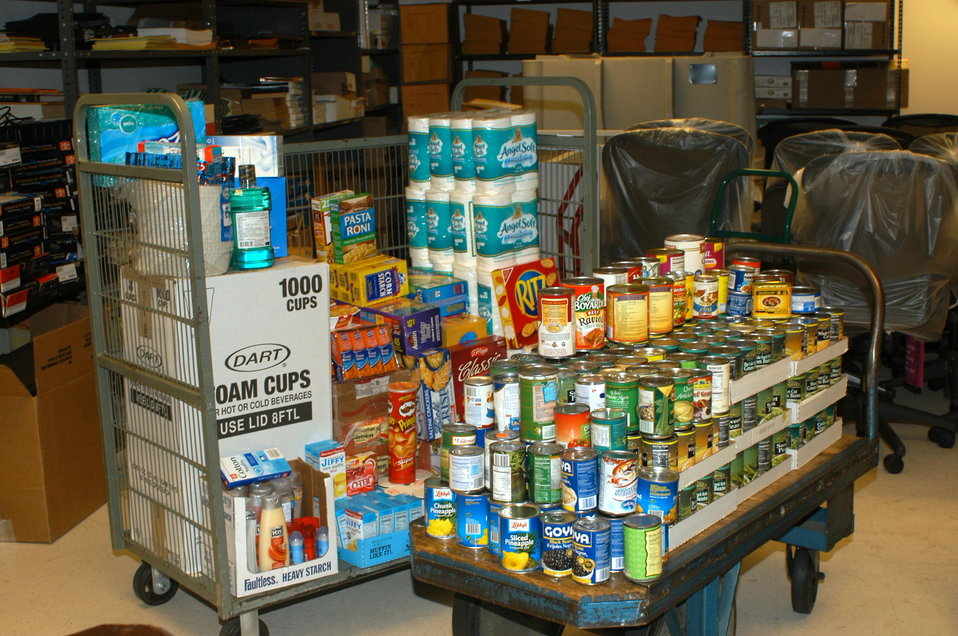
Sierra Exif JPEG